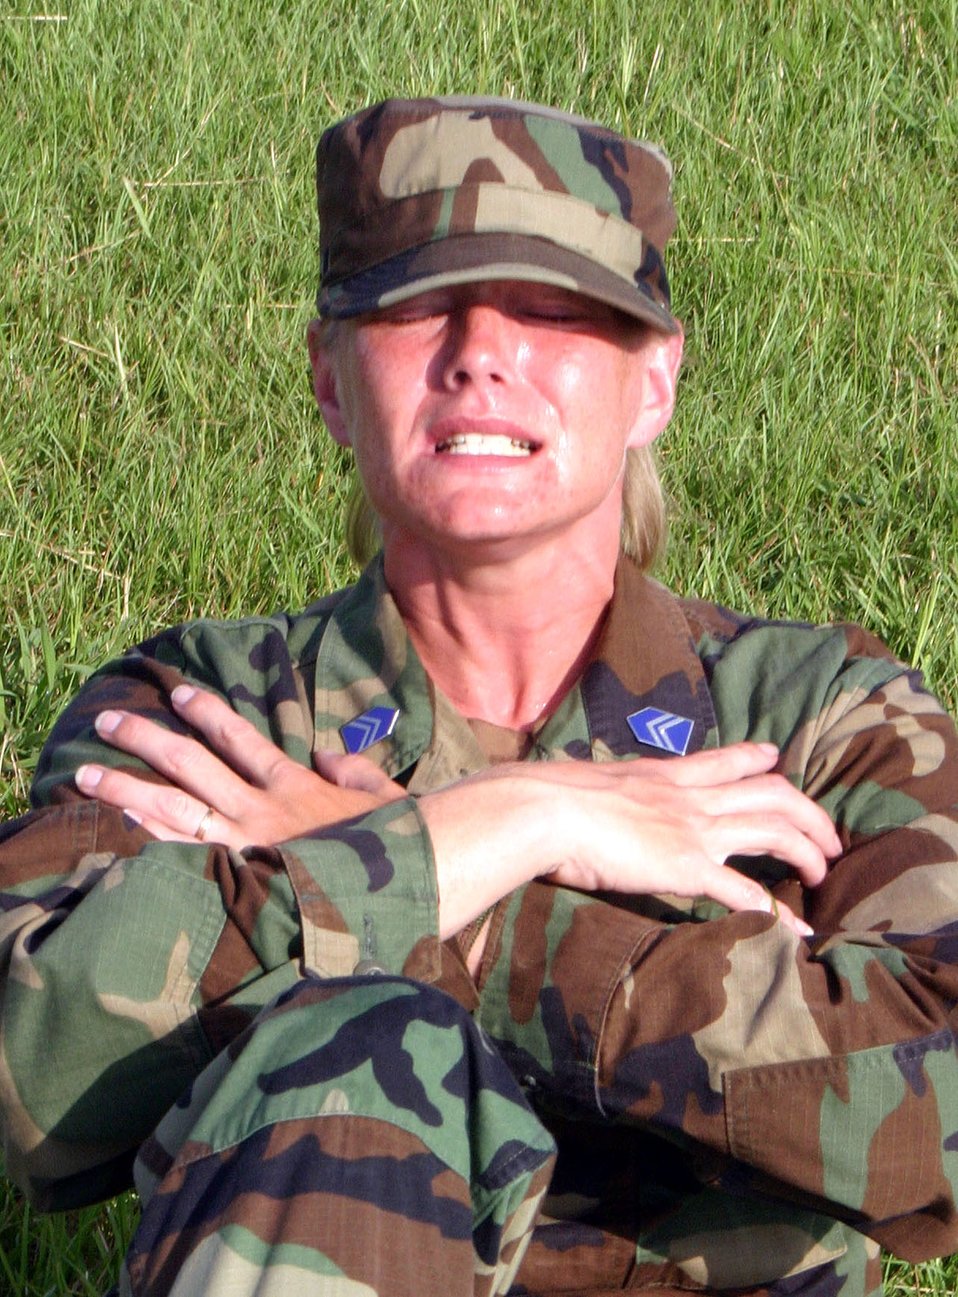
ROTC cadets complete 'Props and Wings Challenge'

ROTC Cadet Tracy Davis performs sit-ups July 17 during the physical fitness test portion of the Props and Wings Challenge at Maxwell Air Force Base, Ala. The challenge tested more than 330 cadets with mental and physical activities during the 27-day field training event.